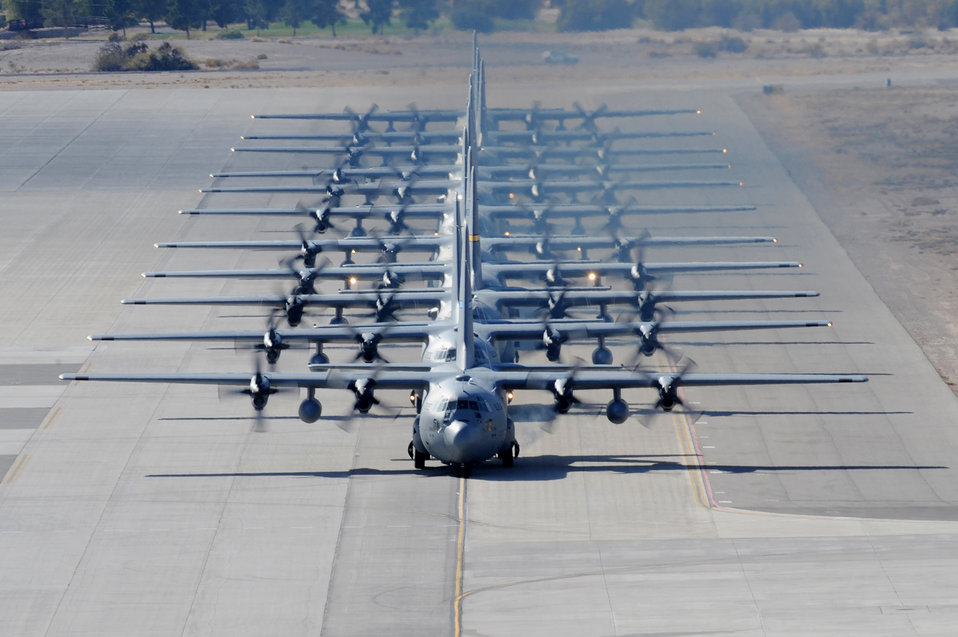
Fall into line

A line of C-130 Hercules taxi during a Mobility Air Forces Exercise on Nov. 18, 2009, at Nellis Air Force Base, Nev. Approximately 40 C-17 Globemaster IIIs and C-130s from Air Force bases around the U. S. flew about 400 Soldiers from Fort Bragg, N.C., for airdrops on the Nevada Test and Training Range.